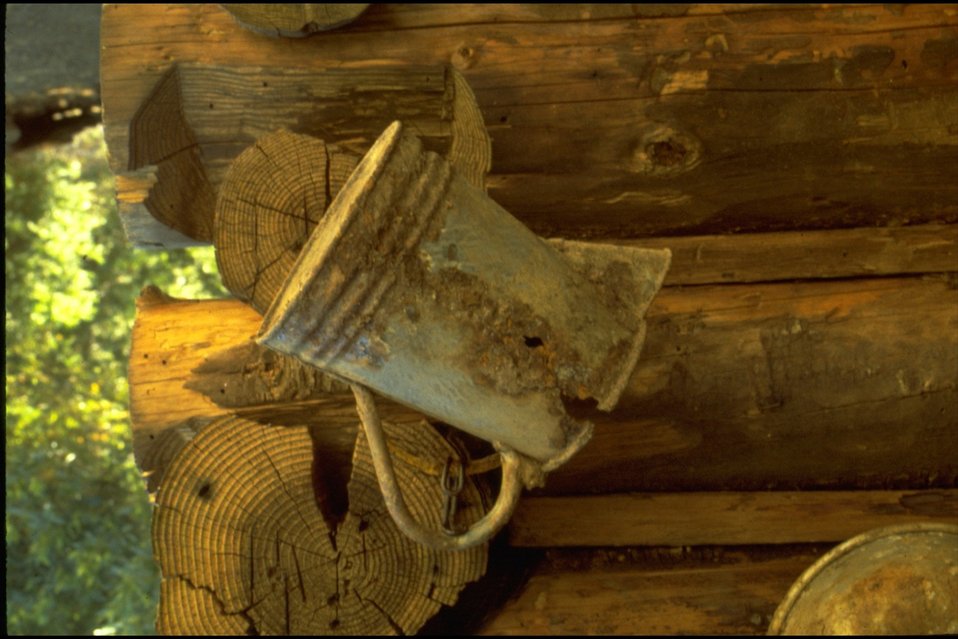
Rogue River - Whisky Creek Cabin.